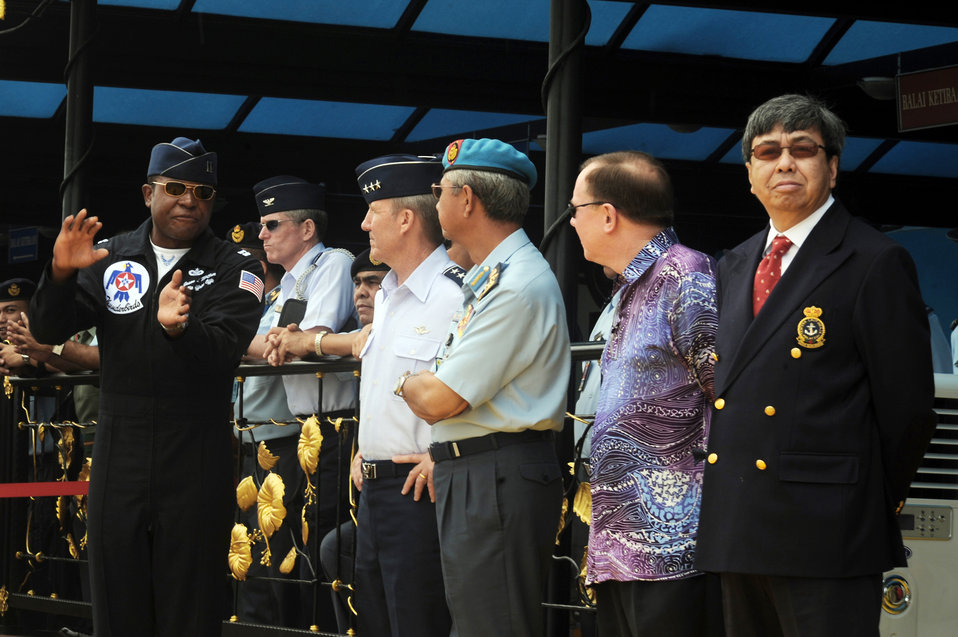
Thunderbirds perform for Malaysian audience

Capt. Jason McCree explains manuevers to Malaysian government officials during the airshow Oct. 3, 2009, in Kuala Lumpur, Malaysia. Also present was Lt. Gen. Herbert J.